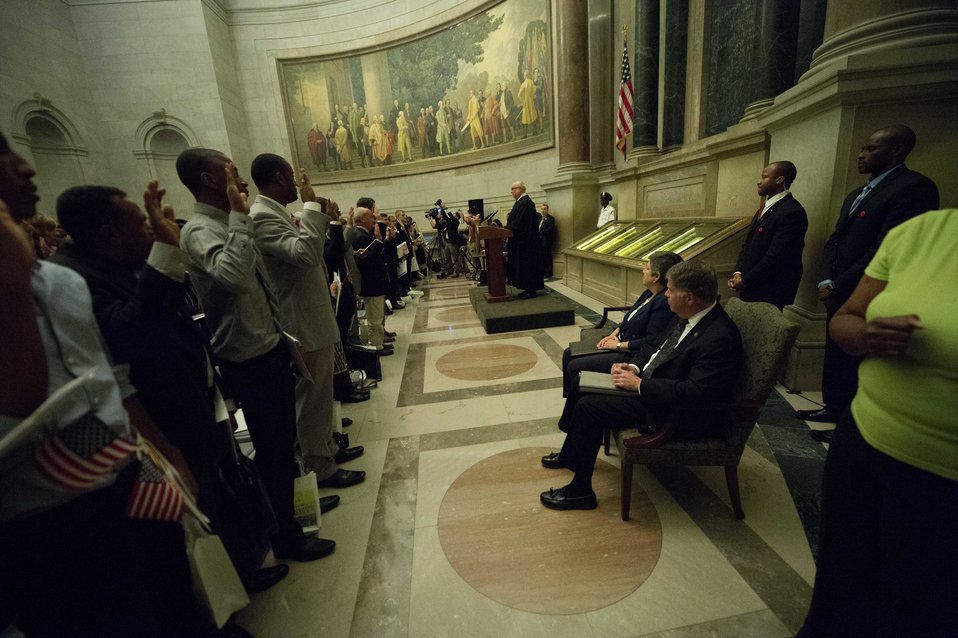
Constitution Day Naturalization Ceremony

The Honorable Royce Lamberth administers the oath of citizenship.